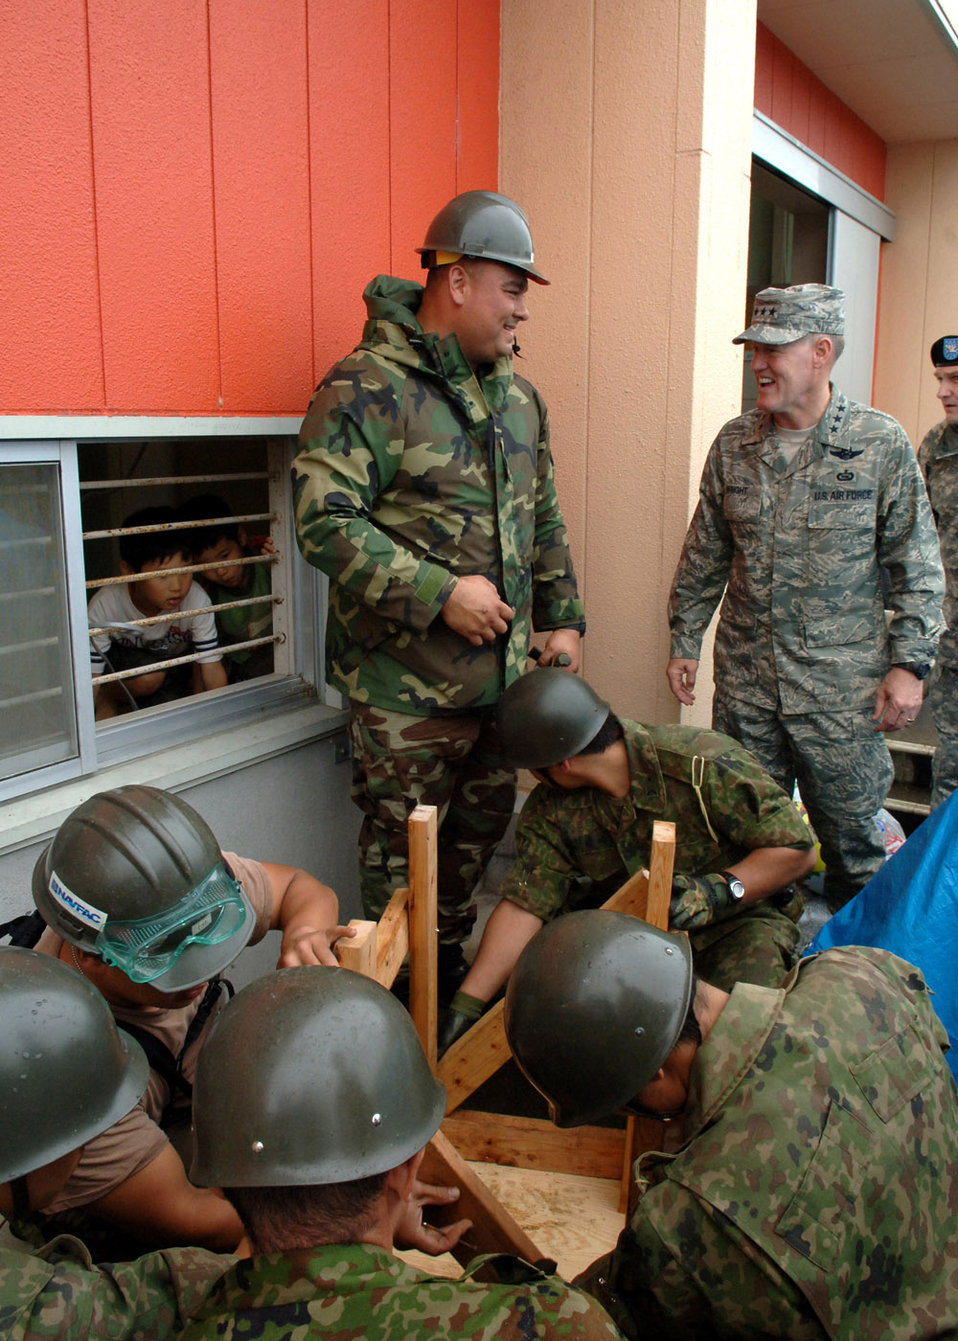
Commander visits Japan earthquake relief team

Lt. Gen. Bruce Wright meets with Seabees from Navy Facility Atsugi and with Japanese Ground Self Defense Force members providing construction support to people affected by the July 16 earthquake in Niigata, Japan. General Wright is U.S. Forces Japan commander.